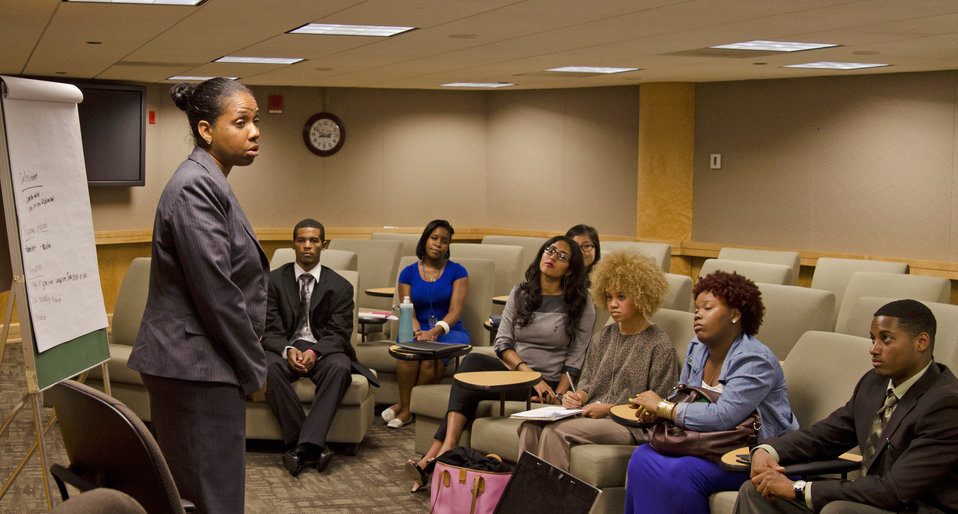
U.S. Department of Agriculture (USDA) Office of Human Resources Management (OHRM) Virtual University, Pathways Programs Officer and Student Intern Development Program Manager Carol Scott addresses the USDA Internship Program Listening Session held in USDA’s South Building in Washington, D.C. on Monday, August 7, 2012. The purpose of the USDA Internship Program Listening Session is to provide interns with a forum to express their views about their experiences as a USDA intern. These young people will be among the most promising future USDA leaders and participate in an individual discussion and group session that will develop leadership skills.